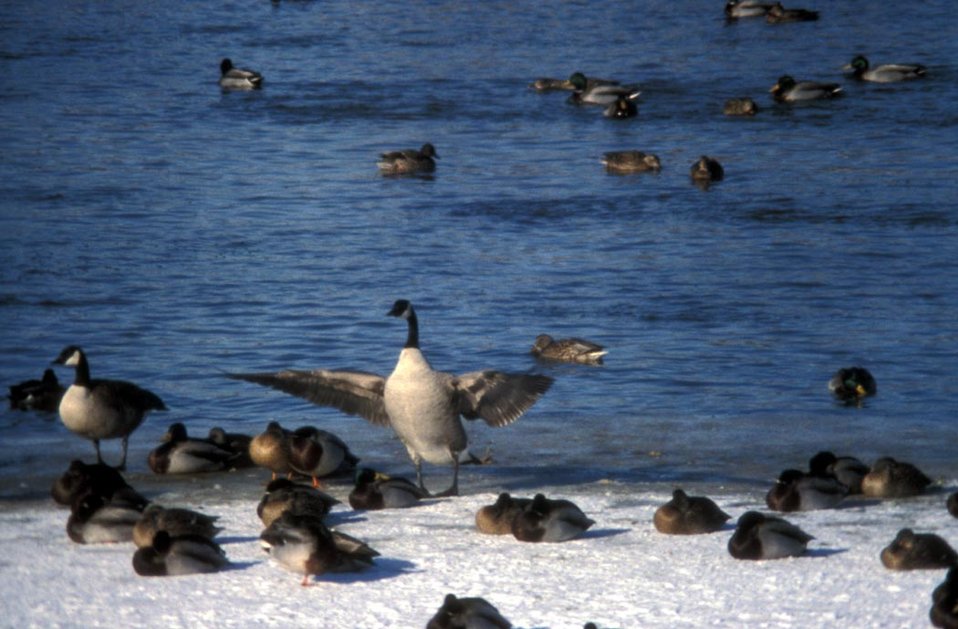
Canada goose and mallards at water's edge.